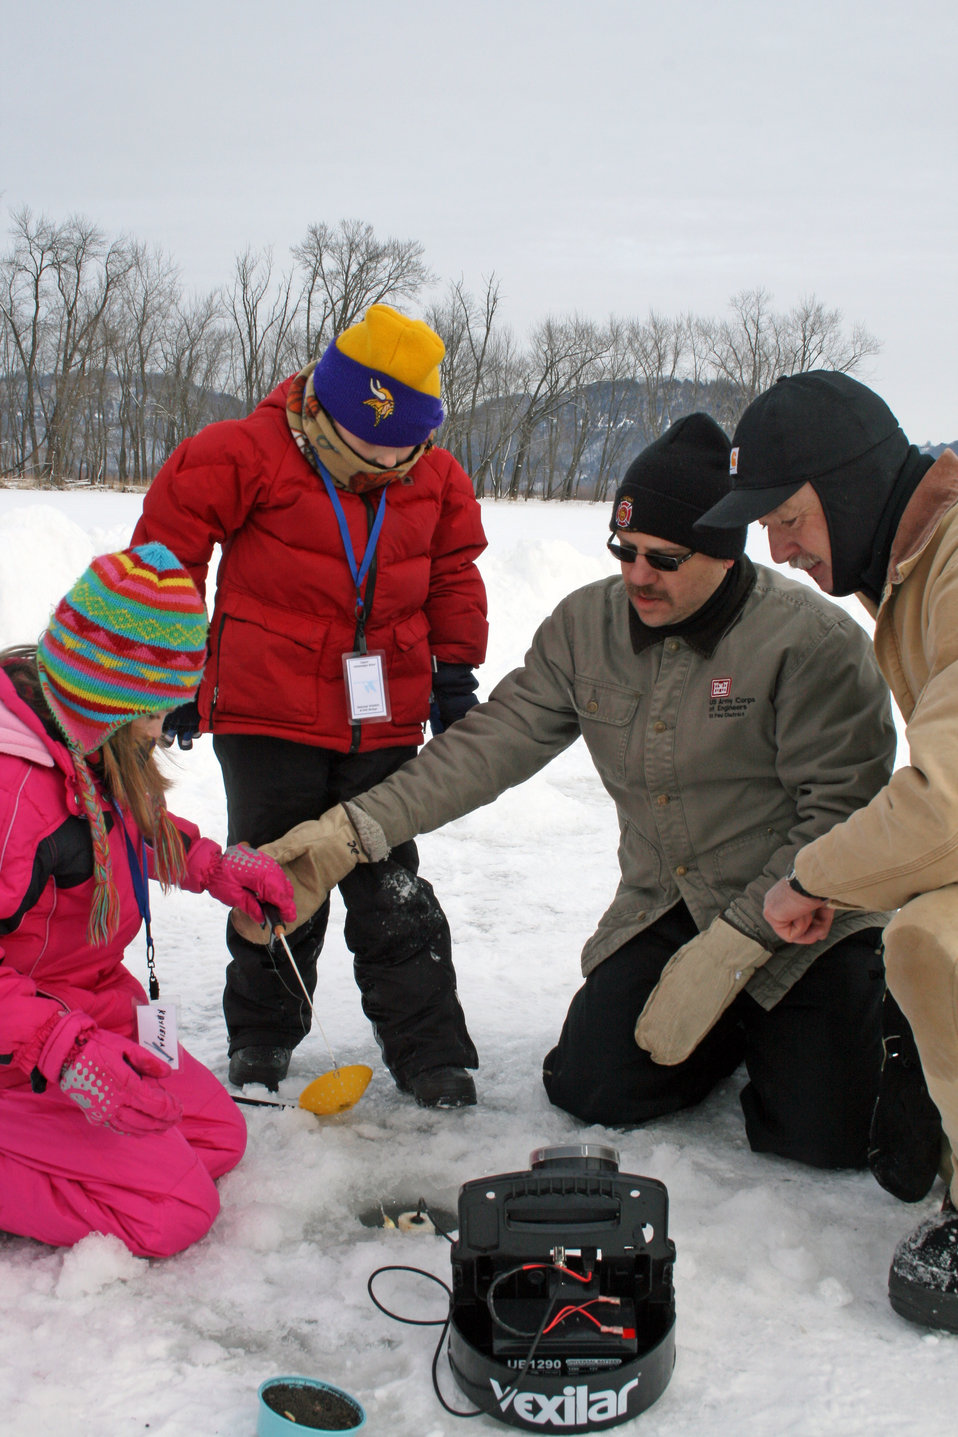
Working Together

Retired FWS employee and current volunteer Tony Batya shows a family of ice anglers how to read the lights on the fish finder.